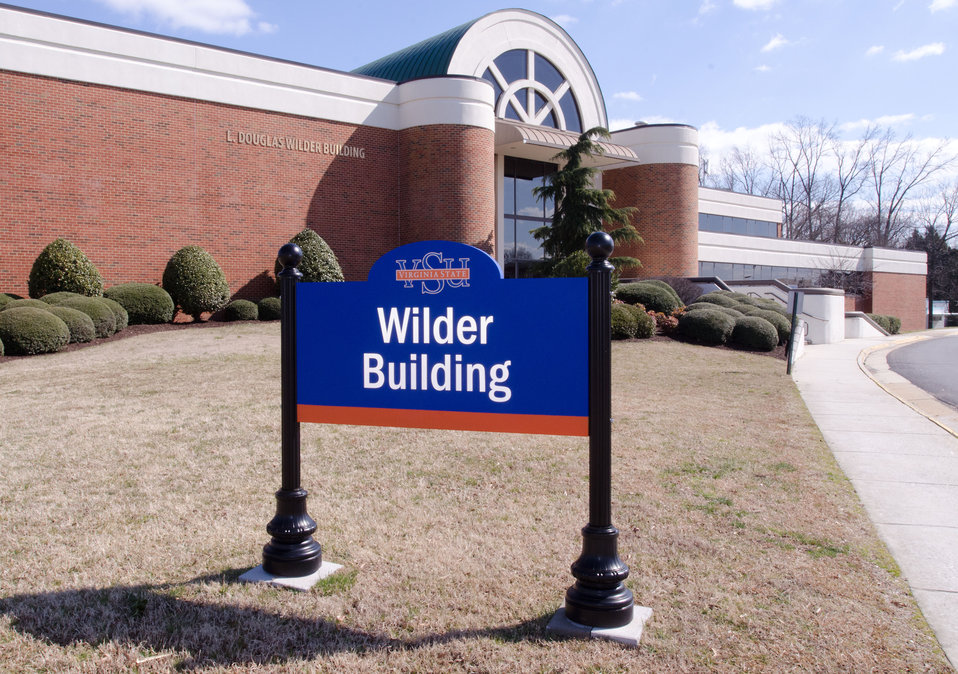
“Virginia State University (VSU), U.S. Department of Agriculture (USDA) and Virginia Farmers Working Together” outreach workshop was held in the VSU, L. Douglas Wilder building on Thursday, March 7, 2013, in Petersburg, VA.